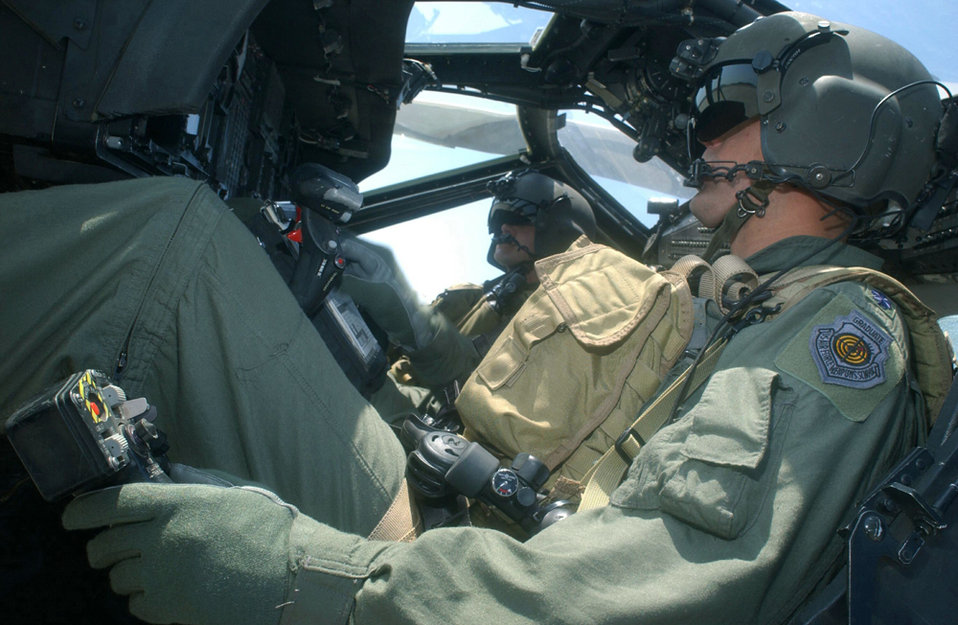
A 'chopper' landing

OVER THE PACIFIC OCEAN -- Lt. Col. Brad Grambo goes through preflight checks with his co-pilot before flying water-landing maneuvers onto a Navy ship near San Diego. The maneuvers are part of water-rescue training for 55th Rescue Squadron HH-60G Pave Hawk helicopter crews based at Davis-Monthan Air Force Base, Ariz. Colonel Grambo is the 55th RQS commander.